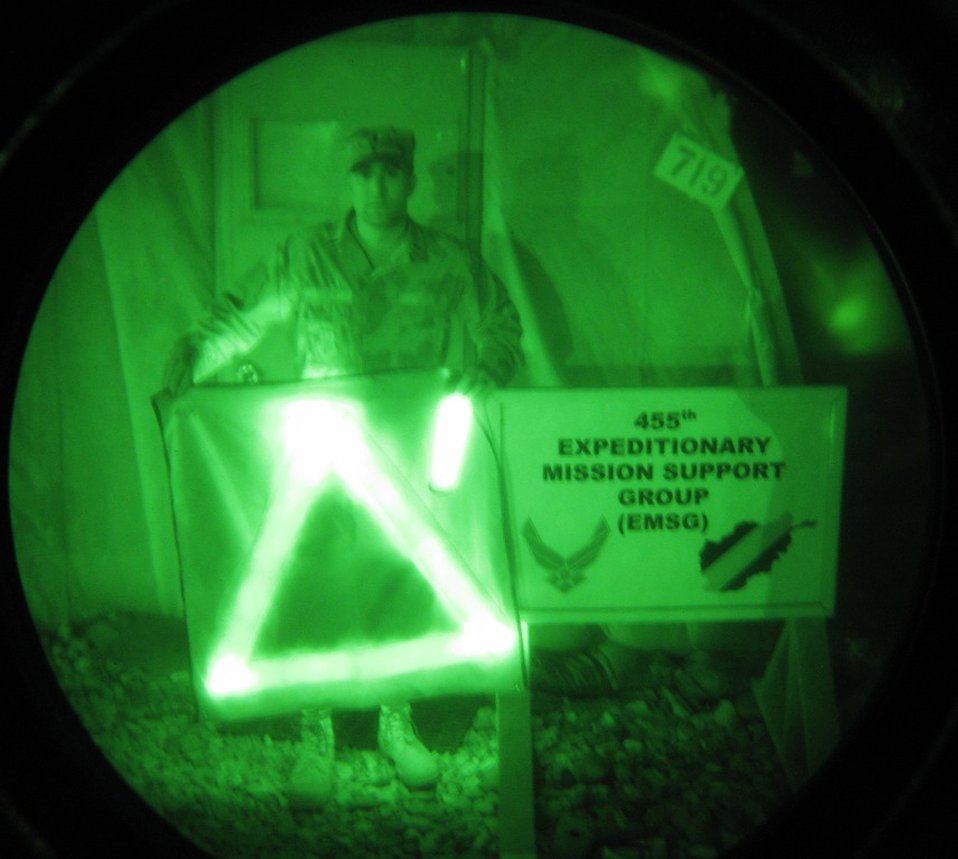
Air Force develops friend vs. foe identification system

1st Lt. TJ Turner is shown through night-vision goggles holding Target Recognition Operator Notification III (left) and TRON I in January near Bagram Air Base, Afghanistan. Air Force Research Laboratory officials partnered with the civilian industry to develop the identification system to save lives and enhance combat effectiveness. Lieutenant Turner is a member of the 455th Expeditionary Mission Support Group.